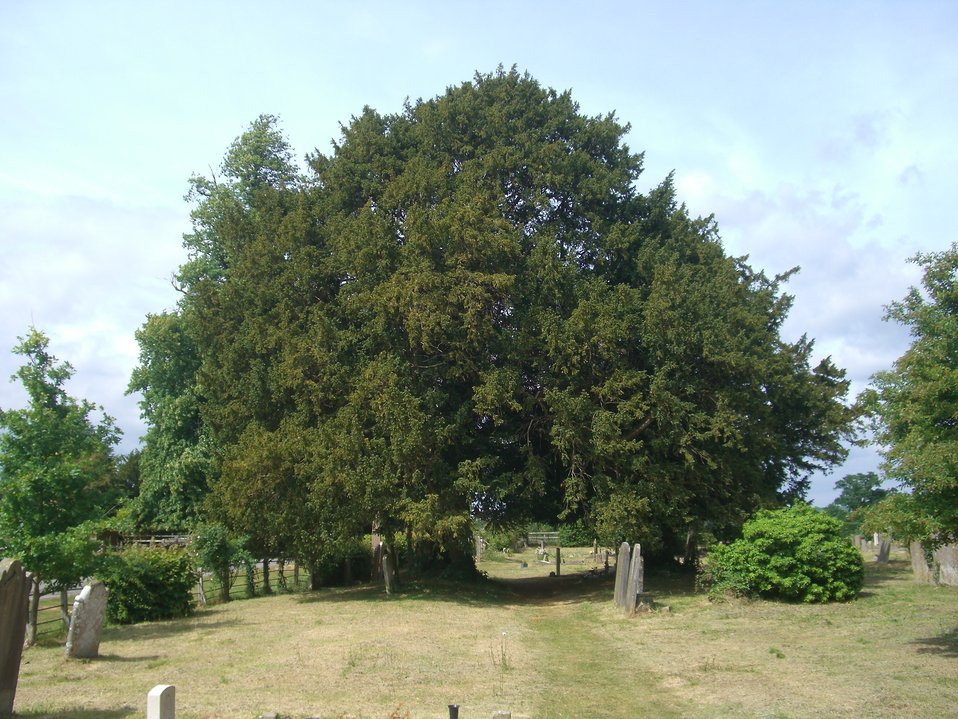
Yew Trees at St Margarets Church, near Hothfield